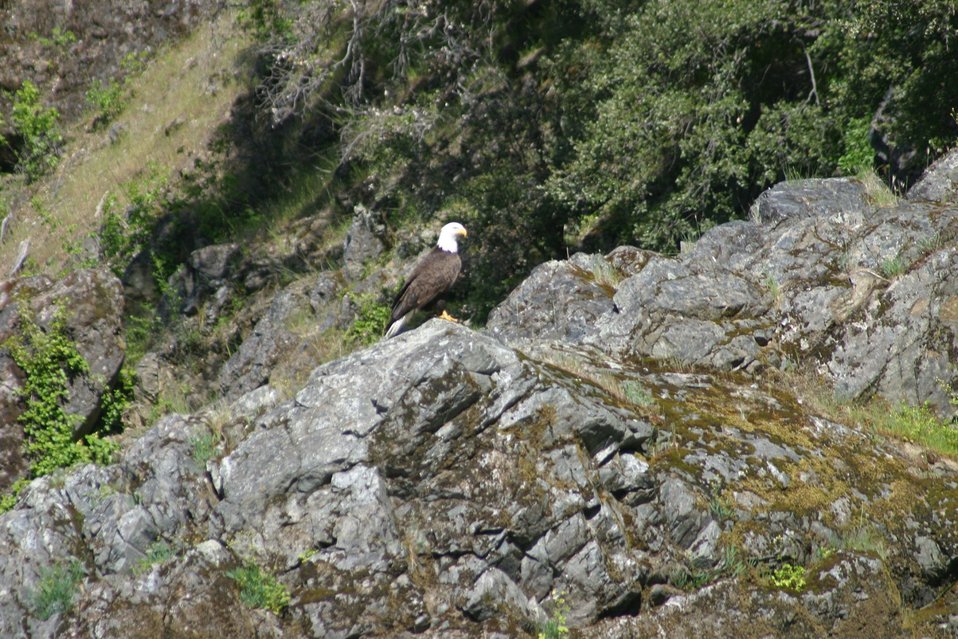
Bald eagle just below Wildcat Rapid on the Wild section of the Rogue River from Grave Creek to Foster Bar May 19 to May 22.